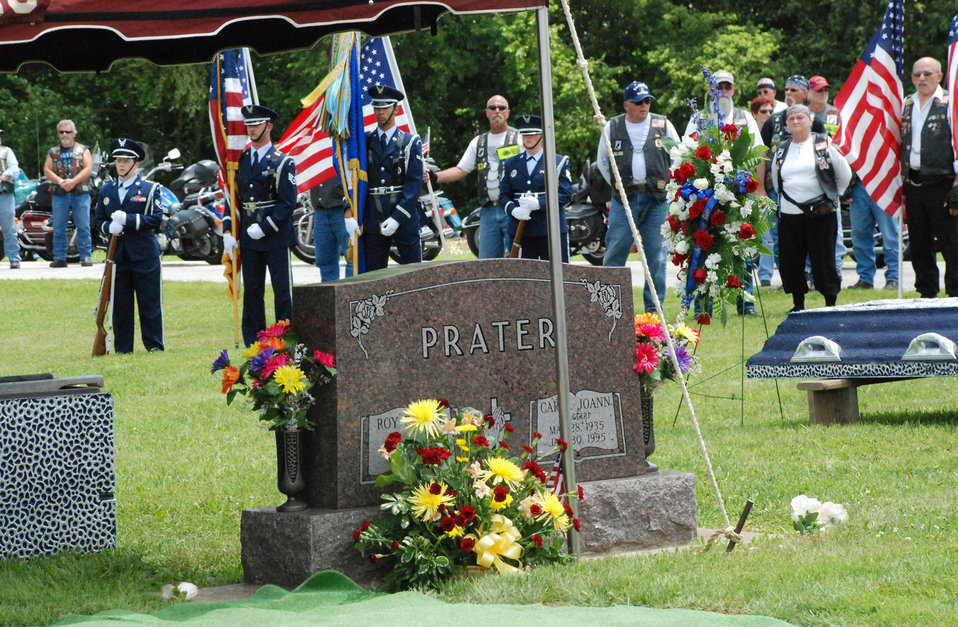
Tech Sgt Roy Prater

An Air Force honor guard team, veterans and members of the Patriot Guard joined the family of Tech. Sgt. Roy Prater who was buried June 19, 2010, in Columbia City, Ind. Sergeant Prater's helicopter was shot down in Southeast Asia during the Vietnam War. He was missing in action for more than 25 years when Joint POW/MIA Accounting Command officials recovered the accident site and later identified his remains.